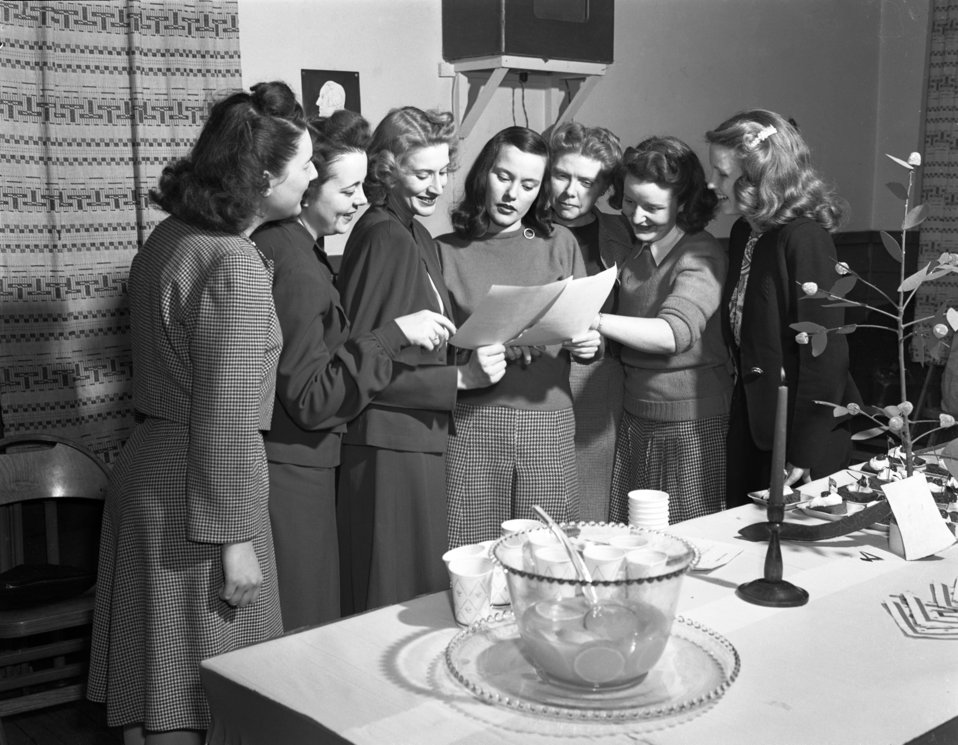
A.E.C. Girls Club Oak Ridge 1947

3313-3b DOE photo Ed Westcott 2-24-1947 Oak Ridge Tennessee